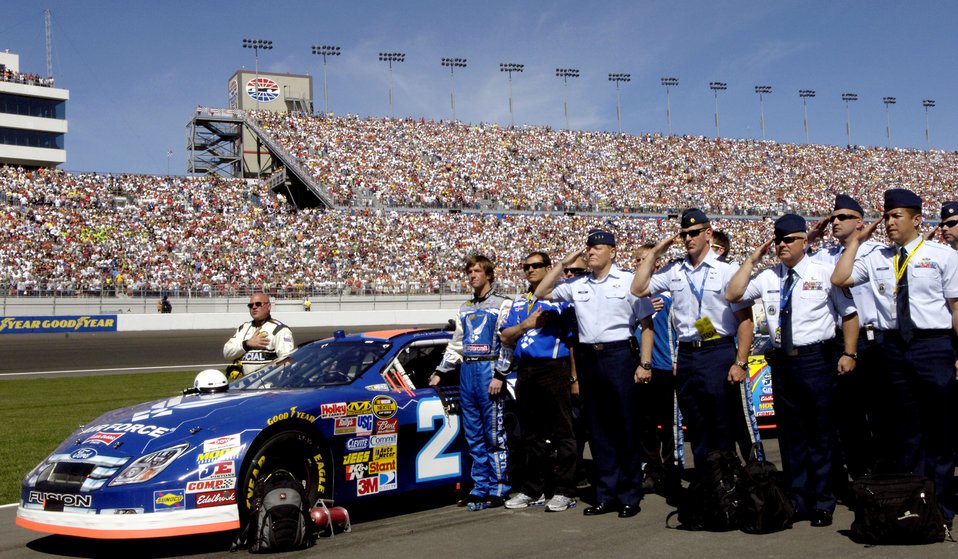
NASCAR Nextel Cup UAW Daimler-Chrysler

Jon Wood driver of Air Force #21 car, crew members, and Air Force representatives pay respect during the National Anthem March 11 at Las Vegas Motor Speedway before the start of the NASCAR Nextel Cup UAW Daimler-Chrysler 400.